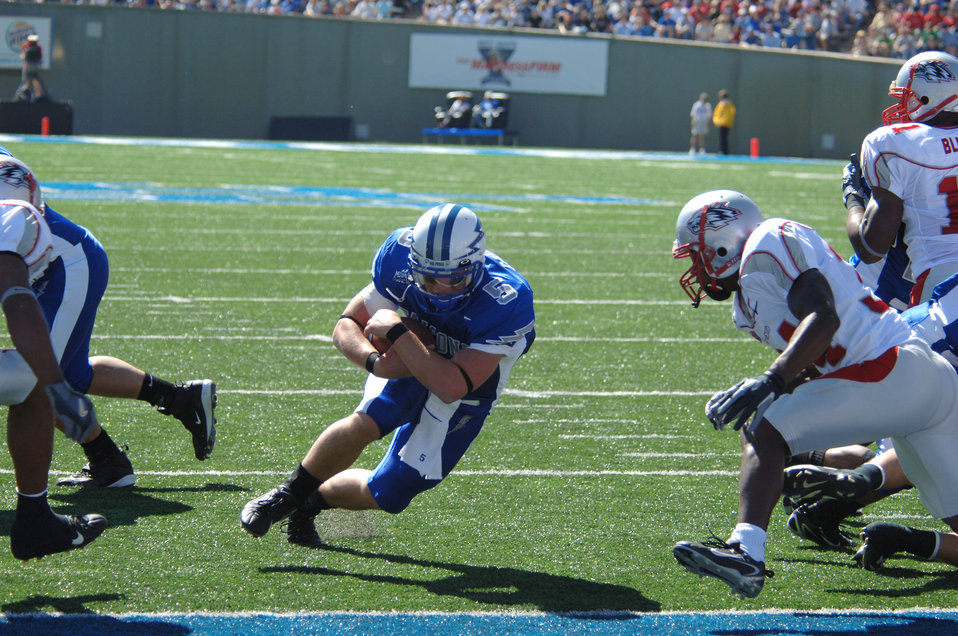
Air Force beats New Mexico 24-7

Air Force quarterback Shaun Carney dives into the end zone Sept. 30 to put the Falcons up 7-0. The Falcons went on to beat New Mexico 24-7 at home and improve their record to 2-1 overall and 2-0 in the Mountain West Conference. Air Force hosts Navy Oct. 7, in the first of two battles against service academy rivals, which will determine the Commander in Chief's Trophy recipient.